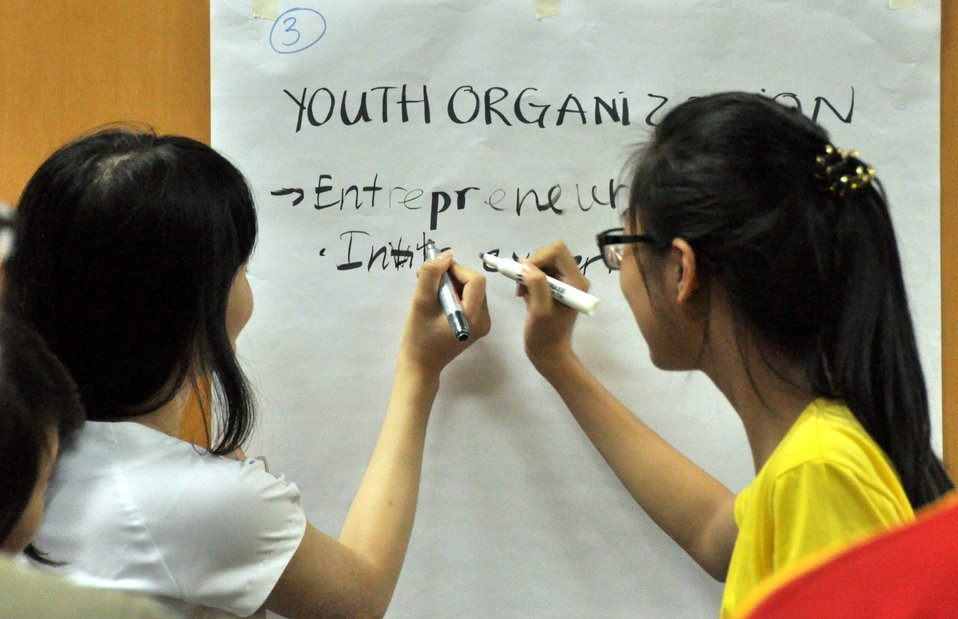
International Youth Day 2013: USAID hosts a lively discussion and group exercise on how youth can join in to advance development

Hanoi, August 12, 2013.